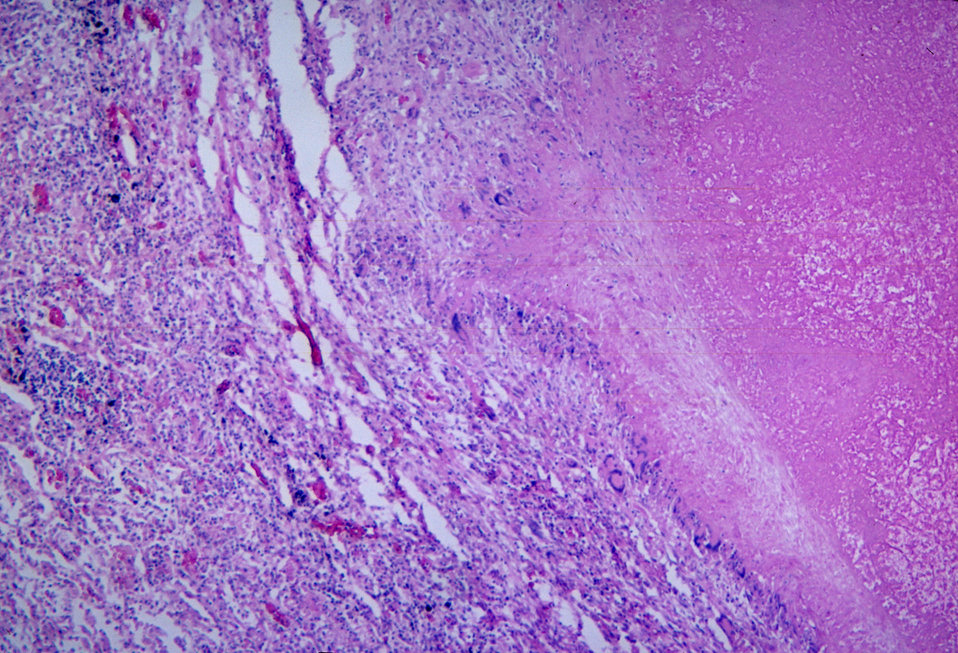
This micrograph depicts the histopathologic changes associated with zygomycosis of the lung.